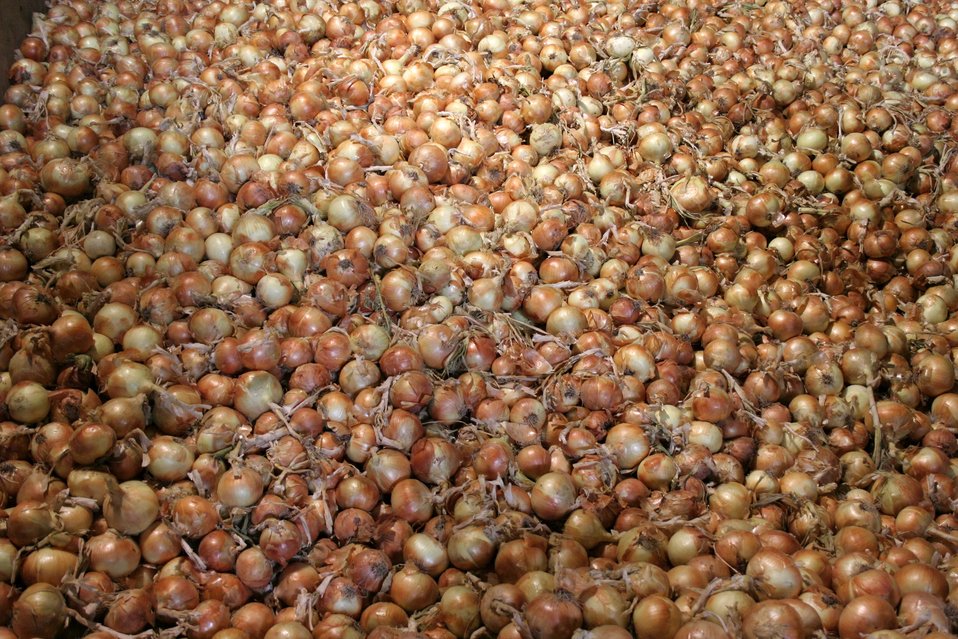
On the Road with Mike Taylor

FDA Deputy Commissioner Michael Taylor and colleagues started a five-day tour of the Pacific Northwest on Sunday, Aug. 11, 2013 -- visiting Idaho, Oregon and Washington -- to get a first-hand look at produce production and irrigation operations, and to discuss the proposed Produce Safety Rule with growers, food industry representatives and state officials. For more about Mike's multi-region tour, read these FDA Voice blog posts:

• Hearing the Concerns of Maine Growers Striving for Agricultural Diversity
• On the Road with Mike Taylor: Touring the Pacific Northwest
• On the Road with Mike Taylor, Day 2: Frank Talk in Farm Country
• On the Road with Mike Taylor, Day 3: Families and Partnerships
• On the Road with Mike Taylor, Day 4: Looking to the Future